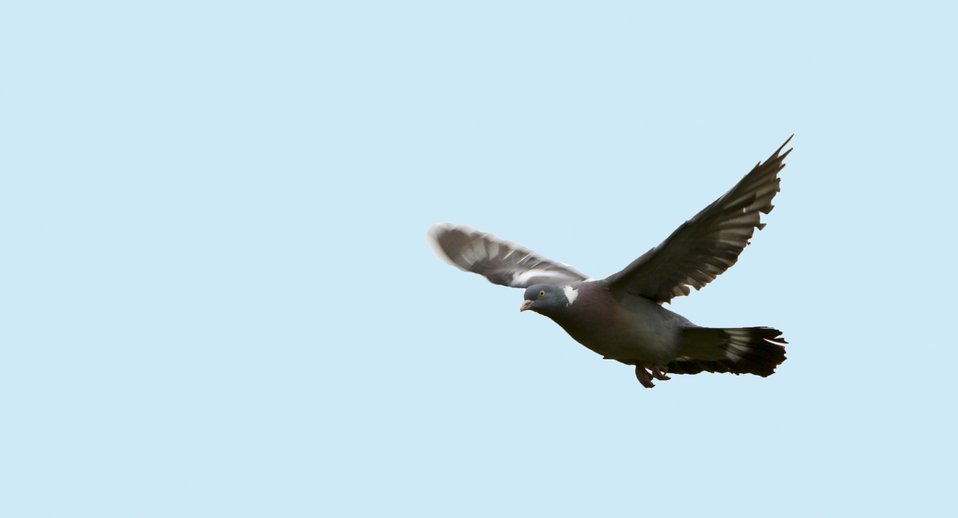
Bird flight blue sky

Pigeon bird in flight against blue sky background.